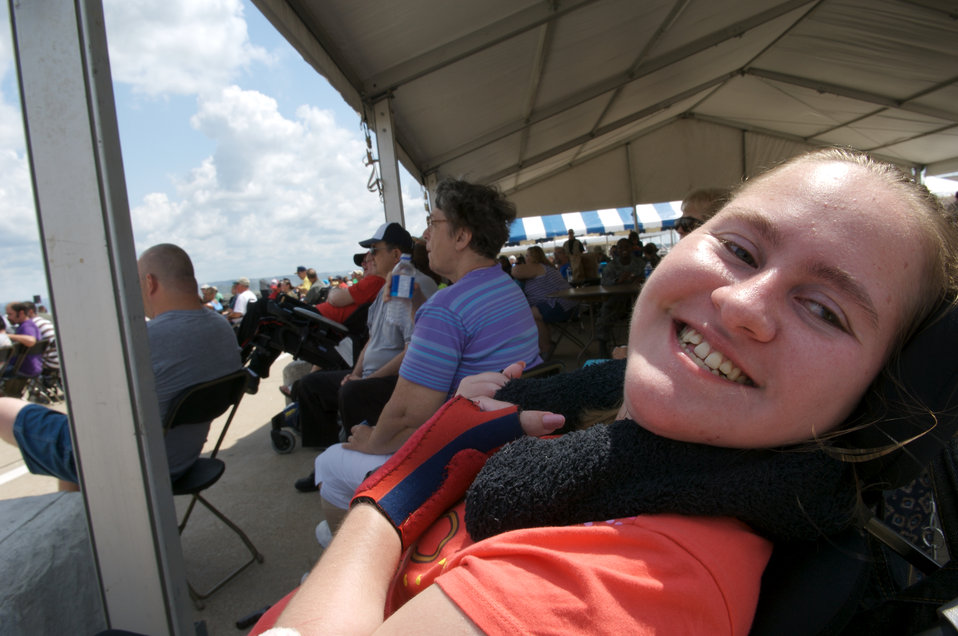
Offutt Airmen hold airshow

Ashley Ferguson and other special needs visitors watch a complete airshow Aug. 15 at Offutt Air Force Base, Neb.